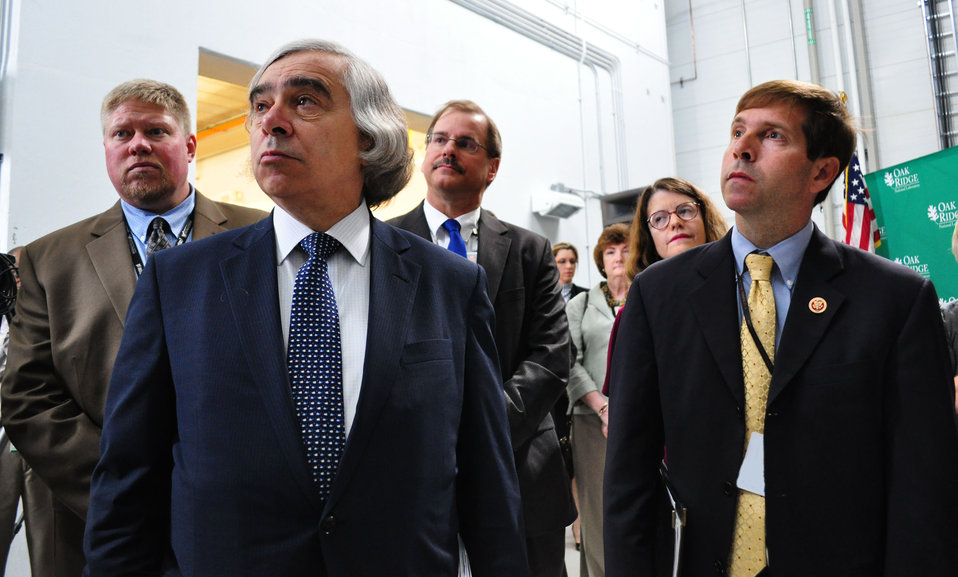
DOE Secretary of Energy Ernest Moniz in Oak Ridge

13-067 DOE photo Lynn Freeny 6-3-2013